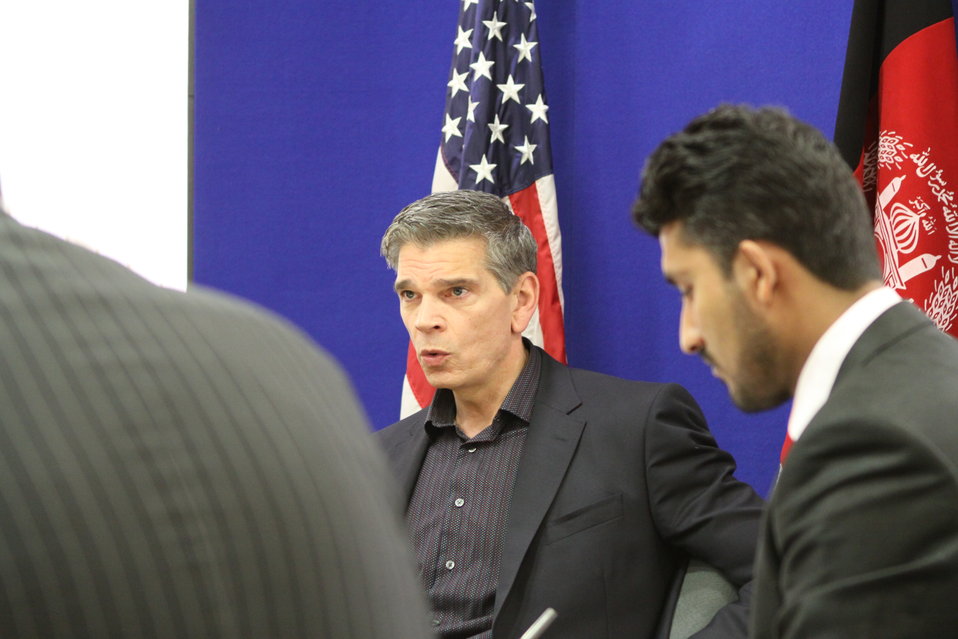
USAID Mission Director Earl Gast Conducts a Media Roundtable with Afghan Media, March 17, 2011